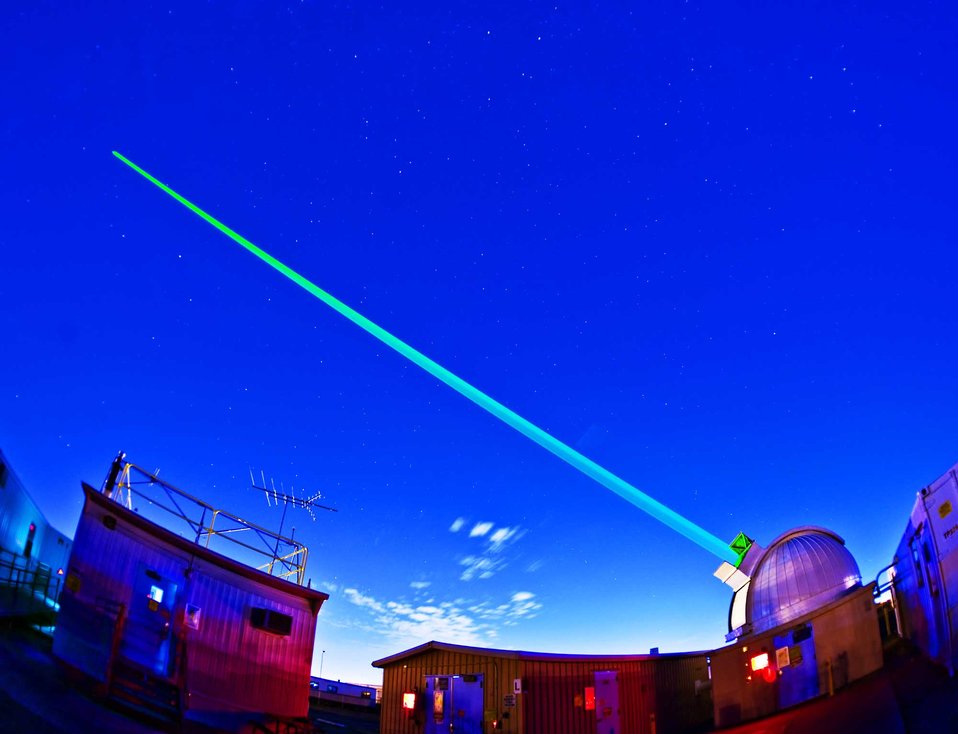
LAZAP satellite at Sandia National Laboratory.

Sandia's LAZAP program was started in the mid-1970's to test and calibrate the optical sensor systems aboard America's Vela reconnaissance satellites.